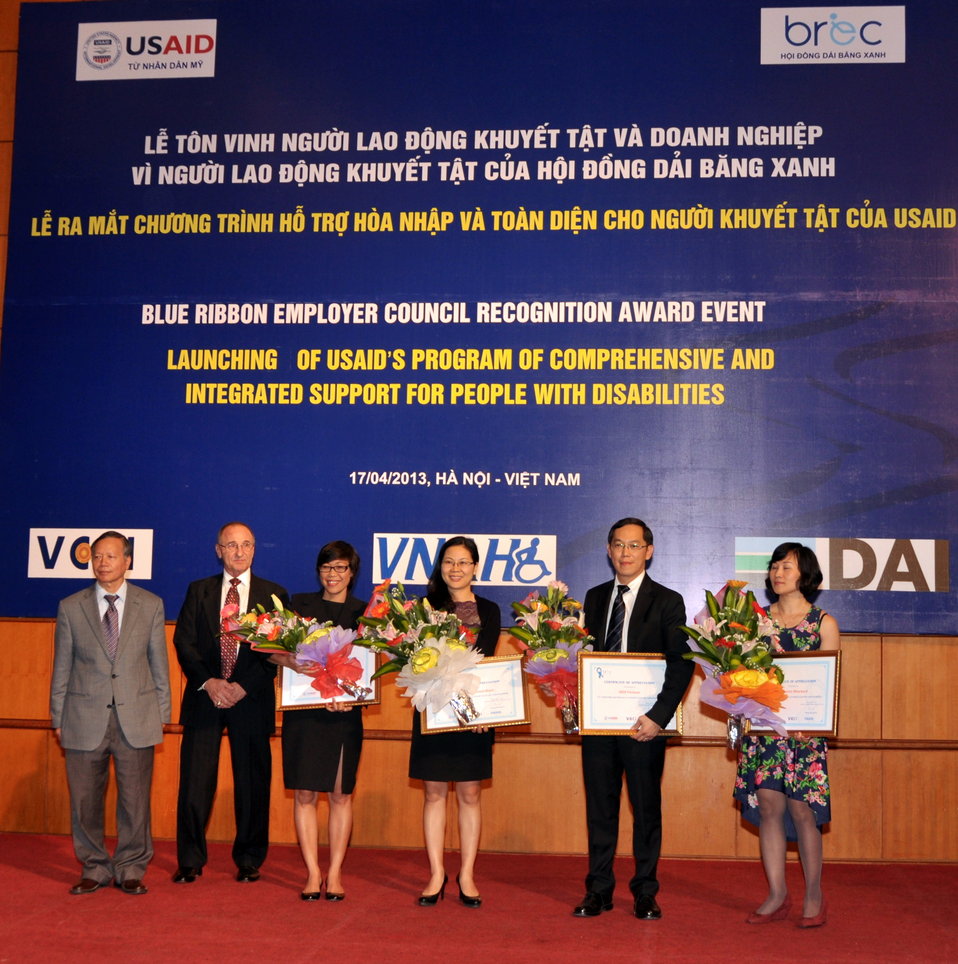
Blue Ribbon Employer Council Awards for Hiring Vietnamese with Disabilities

Hanoi, April 17, 2013